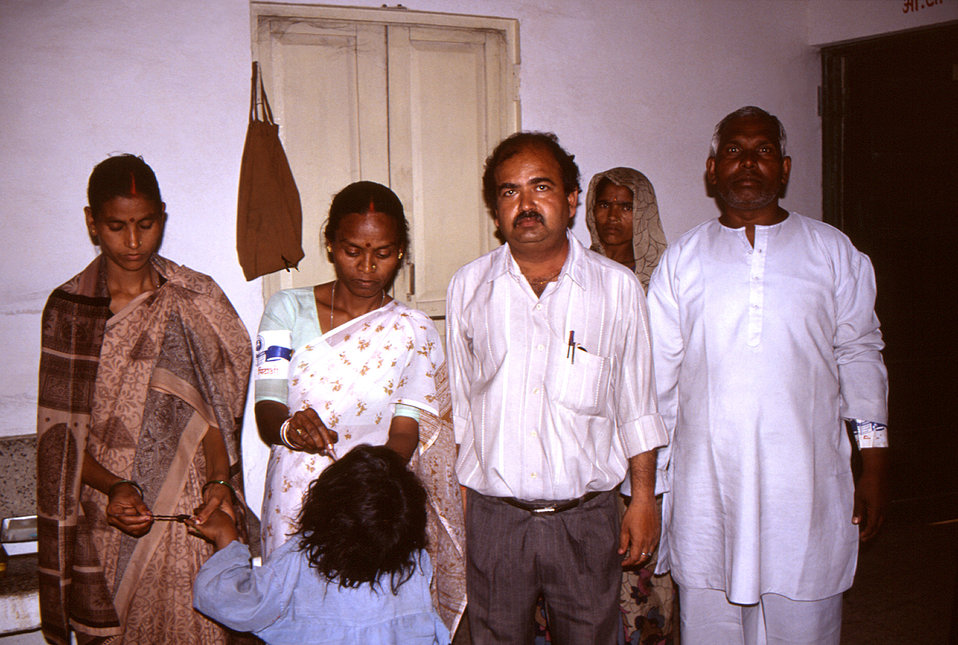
In this 2000 image, provided by Chris Zahniser, B.S.N., R.N., M.P.H., a Stop Transmission of Polio (STOP) team member and photographer, taken at a polio vaccine clinic, two female health care practitioners were administering oral polio vaccine to a child. One healthcare worker was using a dropper to drop the vaccine into the child's mouth, while the other worker was marking the child's finger with ink, in order to designate her as a recipient of the vaccine to other health care workers. Chris was assigned to the state of Uttar Pradesh in northern India, and spent three months working in the Districts of Gorakhpur and Deoria.